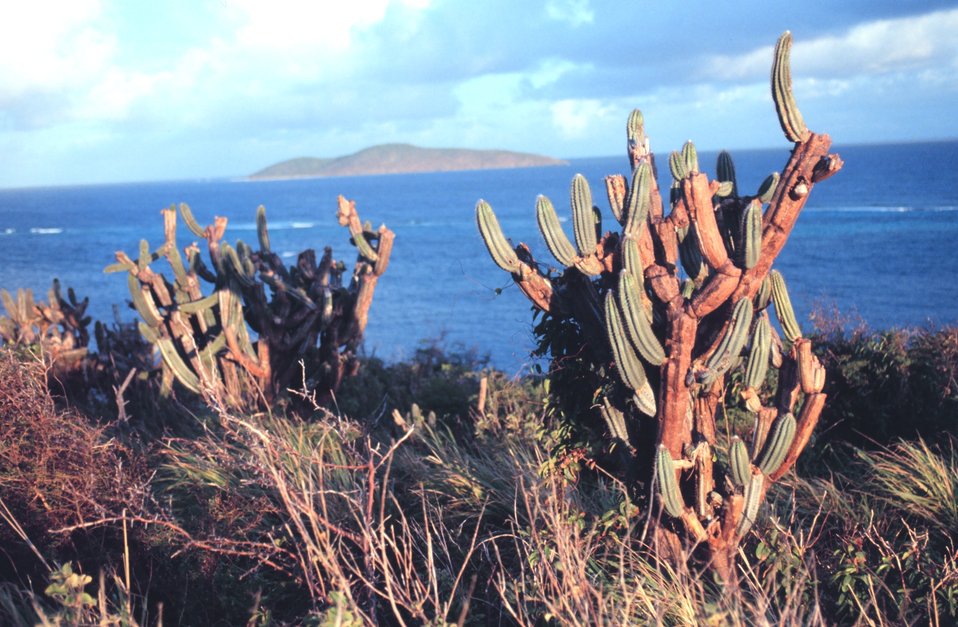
The Virgin Islands - tropical or desert? Cactus on the north side of St. Croix looking toward Buck Island Reef National Monument.